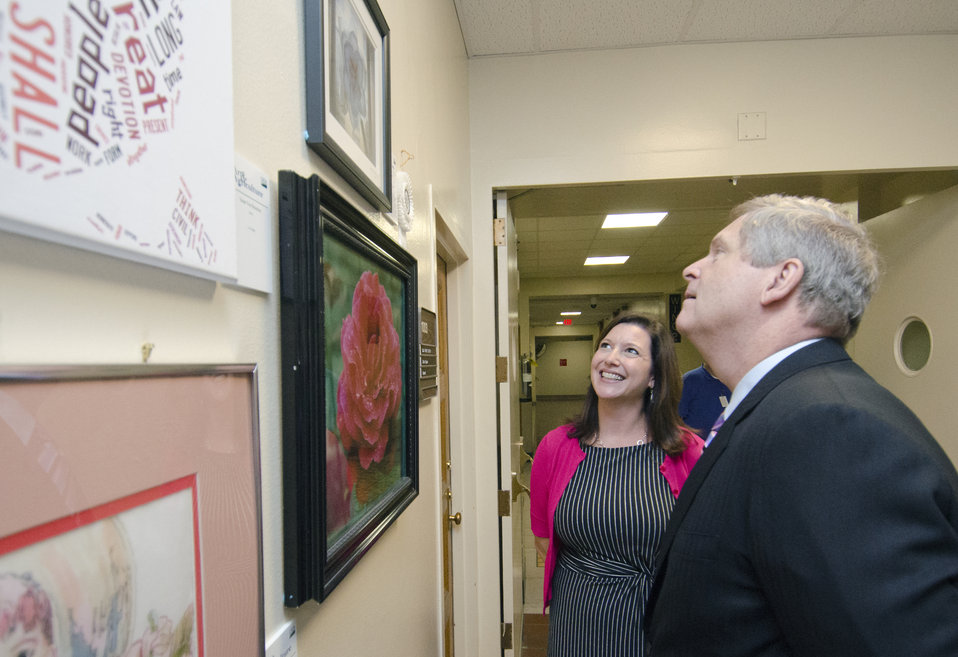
Agriculture Secretary Tom Vilsack visits the gallery of winning entries and talks with Angela Emrich at the Art and Agriculture competition in the South Building, Washington, D.C on Thursday, May 31, 2012. U.S. Department of Agriculture (USDA) full-time and part-time employees submitted art based on ten agricultural themes. The event was part of USDA's 150th Anniversary celebration and the winning artwork is on display from May 15 through December 31, 2012. Artistic expression is a creative outlet that is vital for an individual to grow and develop in their environment.